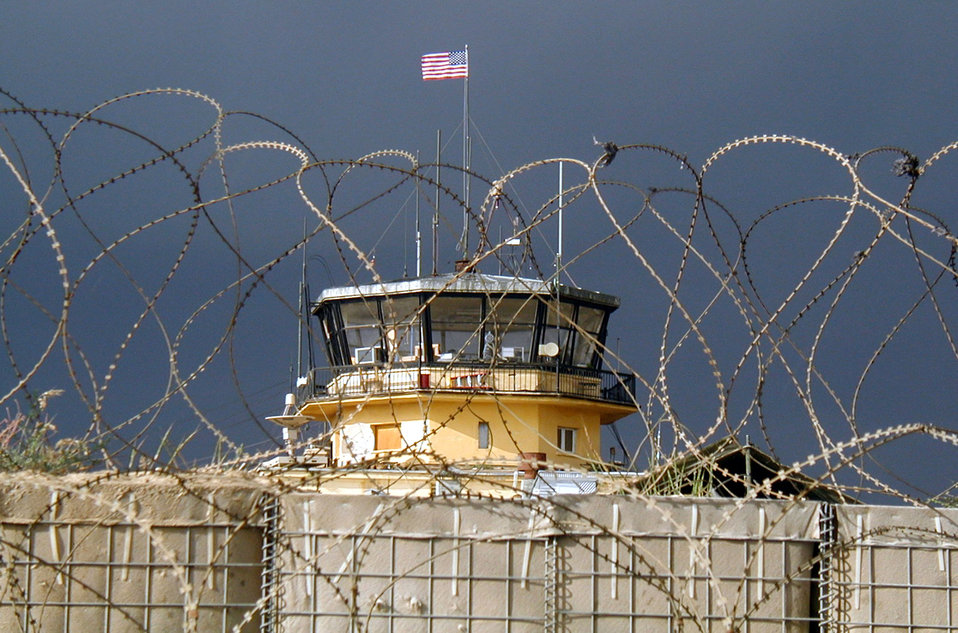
Standing tall

OPERATION ENDURING FREEDOM -- An American flag flies high above the air control tower after a storm at Bagram Air Base, Afghanistan, on May 26. The tower is located inside Air Force Village, which is home to airmen from the 455th Expeditionary Operations Group. Pilots in the group fly A-10 Thunderbolt IIs supporting the war on terrorism.